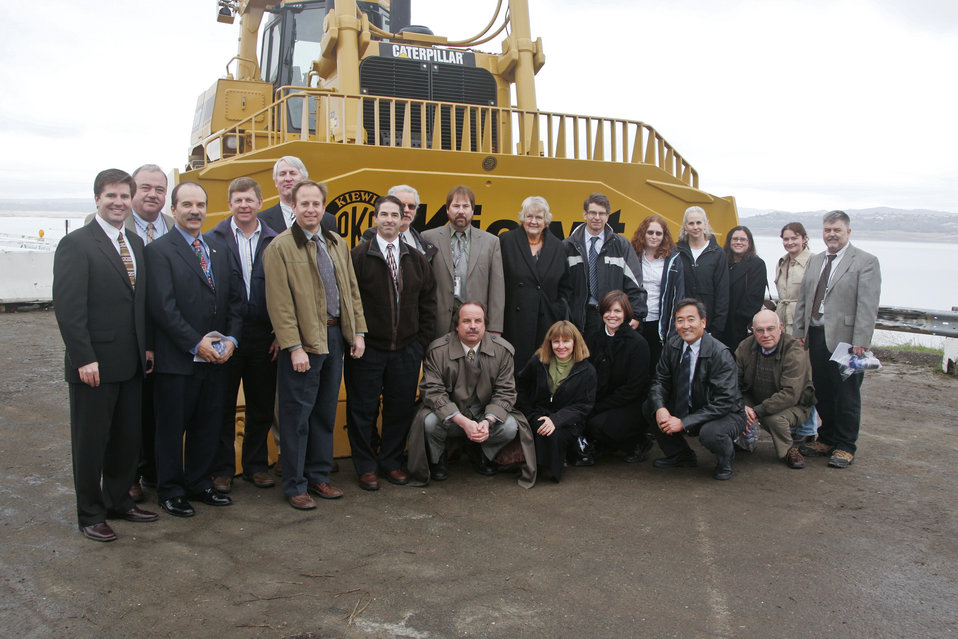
Bridge Partners

FOLSOM, Calif. (Jan. 21, 2011) - U.S. Army Corps of Engineers Sacramento District staff pose with partners from the U.S. Bureau of Reclamation, state of California and the Sacramento Area Flood Control Agency after a ground breaking ceremony for the Folsom Lake Crossing Bridge here on January 11, 2008. The U.S. Army Corps of Engineers Sacramento District was authorized to build the bridge in 2004, after security concerns closed the road atop the dam, a major commuter throughway, in 2003. The Corps completed the bridge in March 2009.